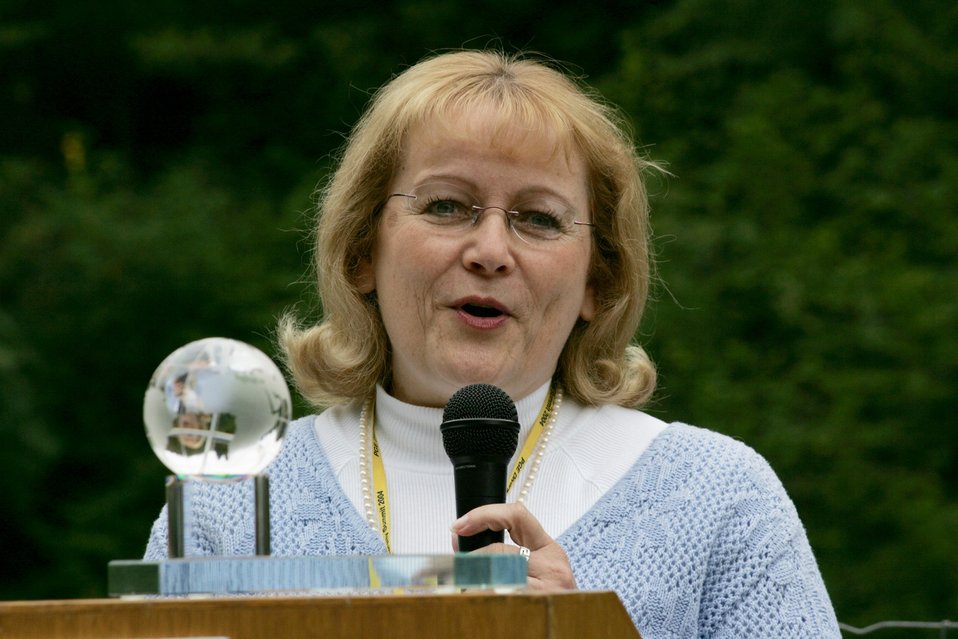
Arleen Barnett, Vice President of Administration for PGE accepts the Four C's Award presented by BLM Director, Kathleen Clarke at the Little Sandy Dam site.